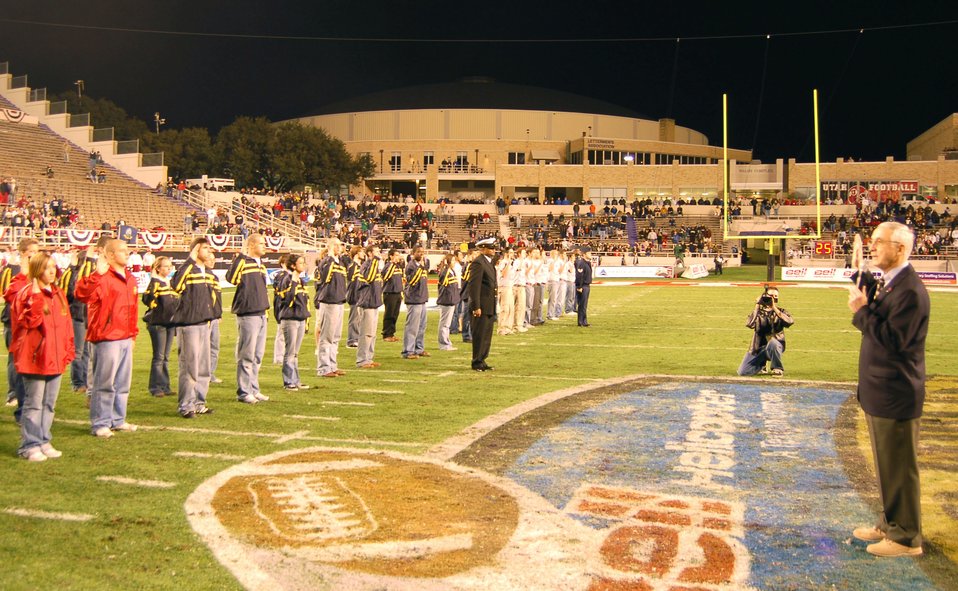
Deputy defense secretary named Great American Patriot

Deputy Secretary of Defense Gordon England (right) administers the oath of enlistment to more than 100 recruits from all the armed forces during halftime at the Bell Helicopter Armed Forces Bowl in Fort Worth, Texas, Dec. 23. The University of Utah Utes defeated the Golden Hurricanes of the University of Tulsa, 25-13.